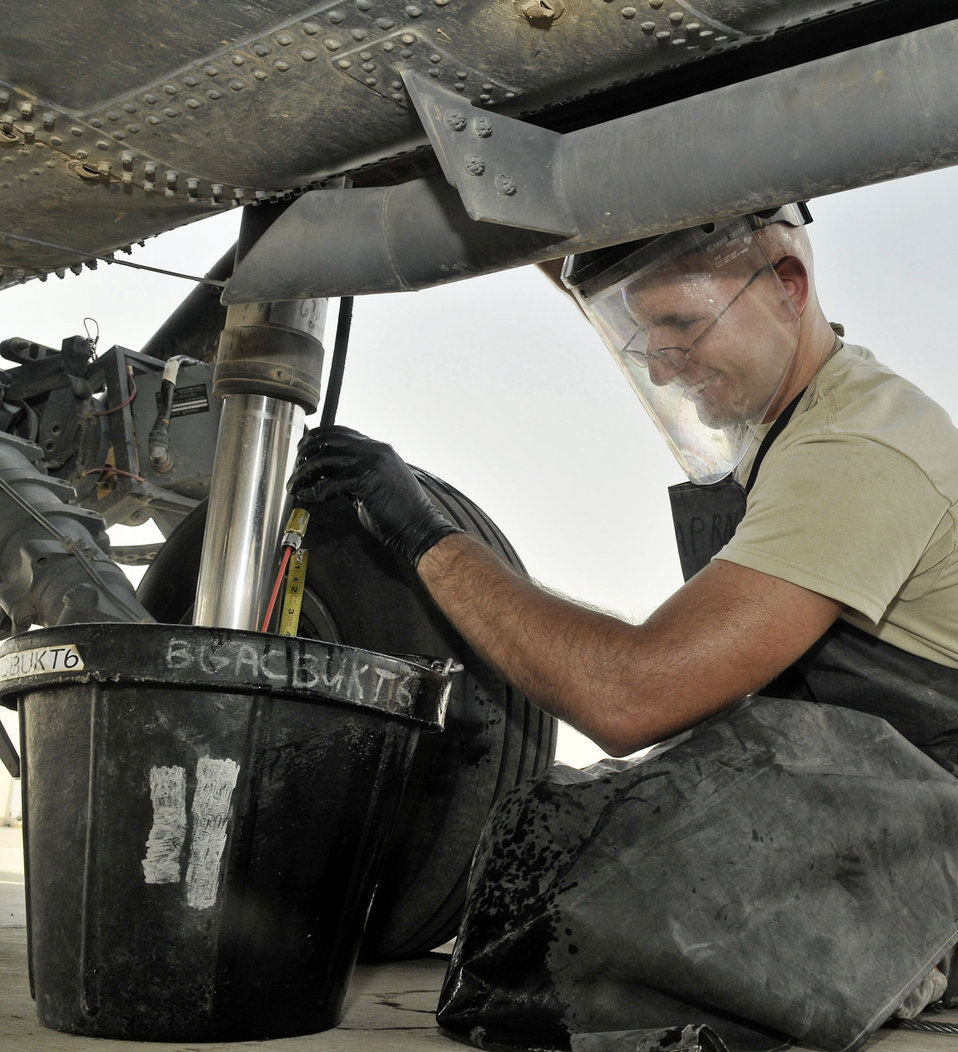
Moving HH-60 Pave Hawks

Staff Sgt. Michael Burch services the right-main landing gear strut on a HH-60 Pave Hawk Aug. 12, 2010, at Joint Base Balad, Iraq. Sergeant Burch is a crew chief deployed with the 332nd Expeditionary Aircraft Maintenance Squadron.